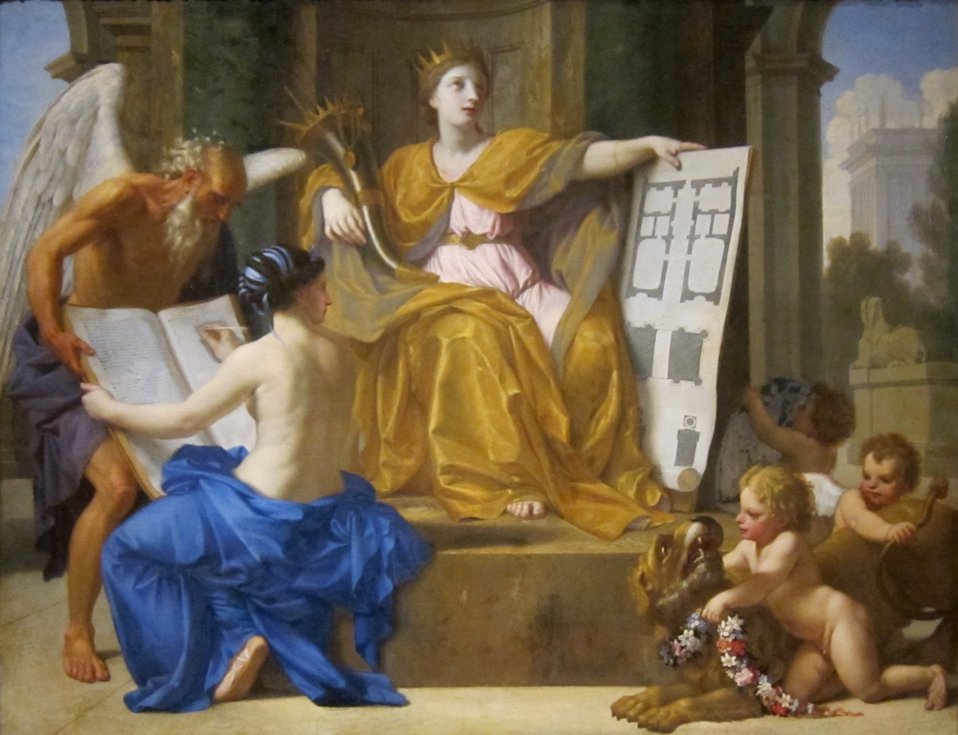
'Allegory of Magnificence' by Eustache LeSueur, Dayton Art Institute